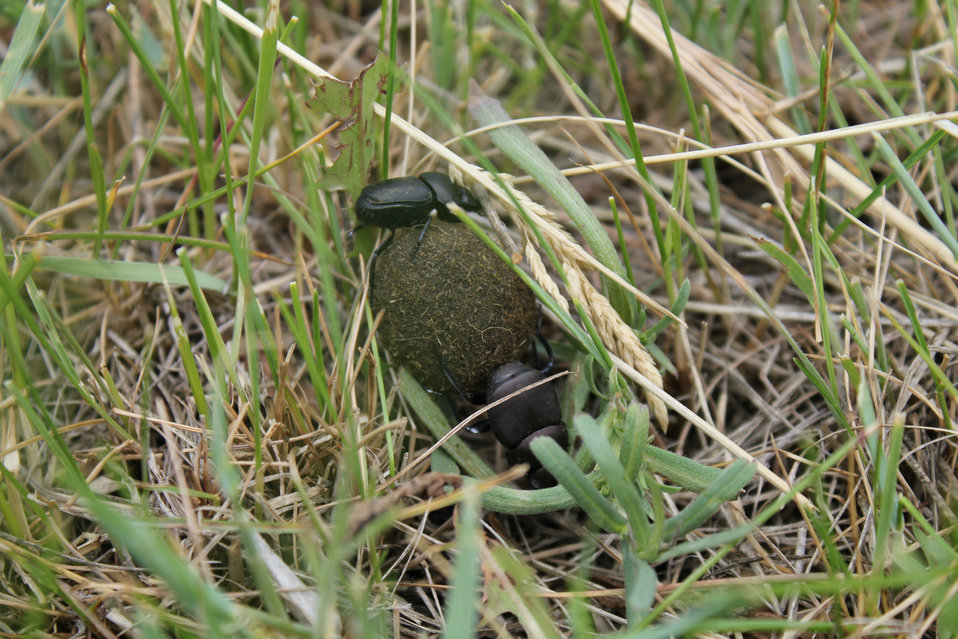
Dung Beetles on War Horse NWR

Chances are this is a male and female dung beetle that has established a pair bond. The male beetle rolled cow manure into a ball and presented it to the female. Now that she has accepted the smelly present, they are busy rolling it to an area where they can either bury it for food for themselves or as a place the female can lay her eggs.

Credit: Beverly Skinner/USFWS

Photo Contest Entry #179